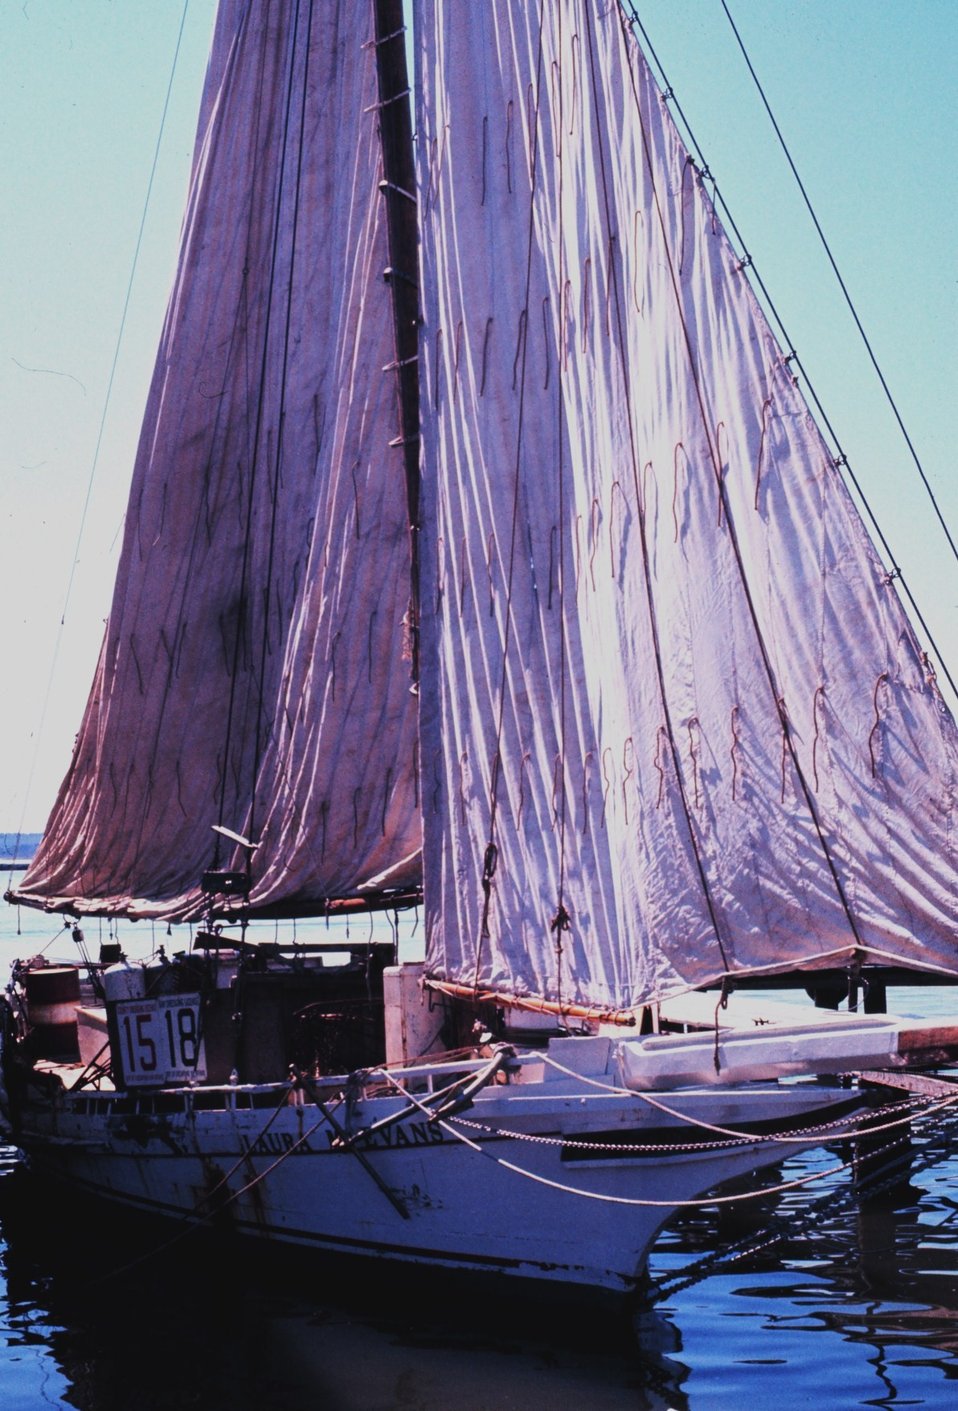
Sailing oyster dredgers drying their sails alongside the dock.